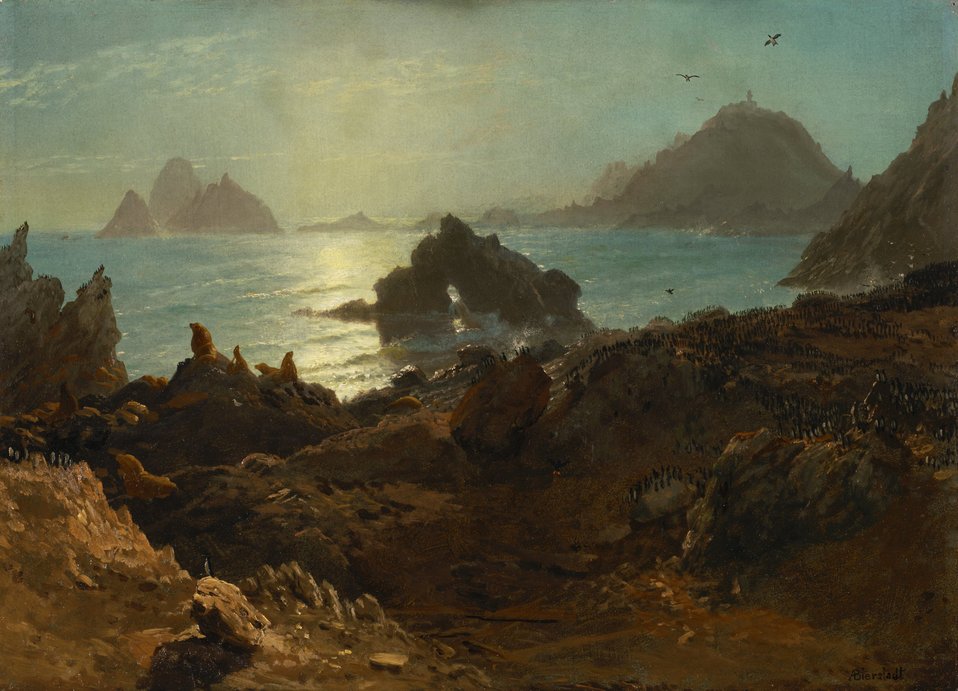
Albert Bierstadt - Farallon Islands (1872)